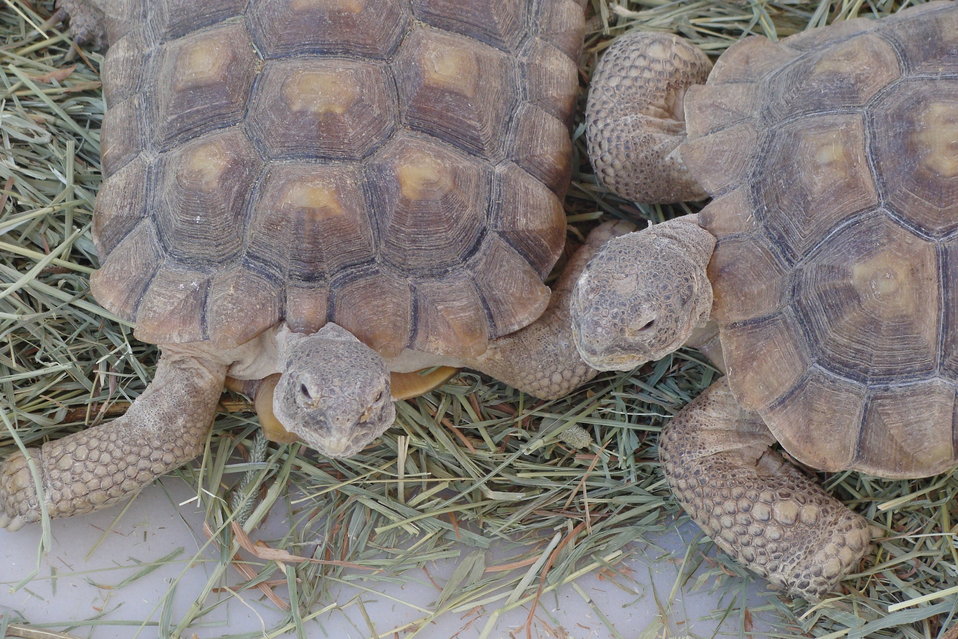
Mojave Desert Tortoise

The U. S. Fish and Wildlife Service has announced the availability of a Revised Recovery Plan for the threatened Mojave population of the desert tortoise (Gopherus agassizii) under the Endangered Species Act (ESA). The Plan takes a new approach to reversing declines in Mojave desert tortoise populations through a coordinated effort of science-based implementation and evaluation of conservation actions.

Unlike the previous Recovery Plan, which focused on mitigation measures, this Plan recognizes the need to adjust to the accelerating pace of environmental change and its impact on key resource management issues, such as corridors and connectivity. The Plan will be a living document that advances a natural resource management model where ongoing detection of changes and attribution of causes will provide the basic information on whether or not the desert tortoise or its ecosystem is changing beyond natural variability.

By continuous examination of vulnerability, exposure, sensitivity, and adaptive capacity of the desert tortoise to environmental change, resource managers will be able to update the Plan as it is being implemented with conservation measures that will help the desert tortoise recover.